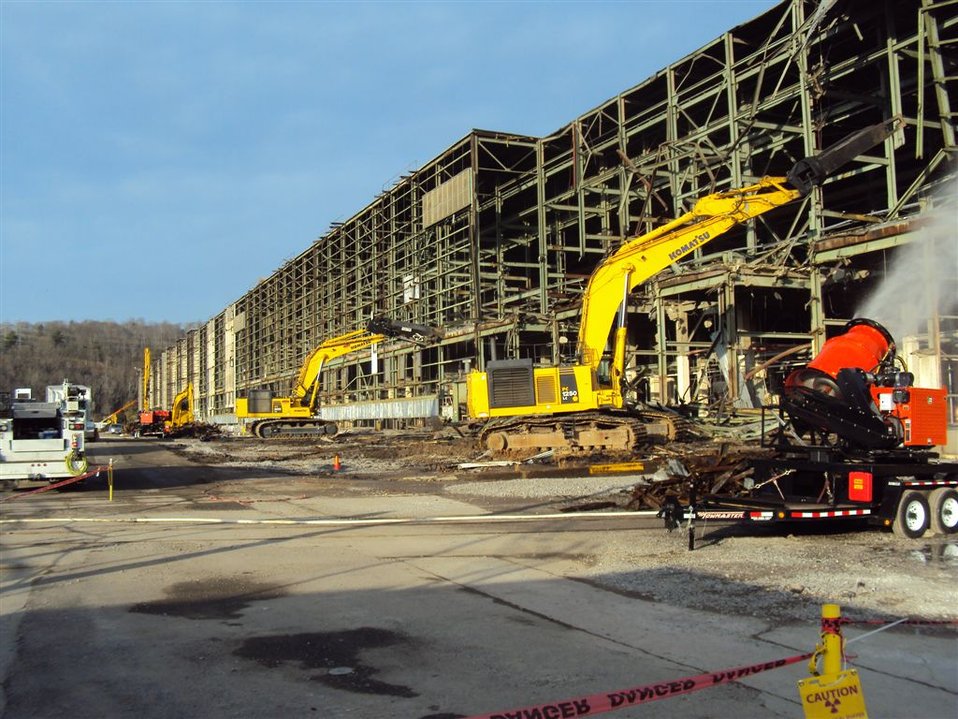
Recovery Act-funded K-33 demolition

Workers conduct demolition activities at Building K-33.